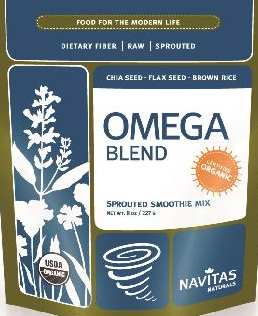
RECALLED – Sprouted Chia Seed Powder Products

June 6, 2014 – Product Recall – Navitas Naturals Expands Voluntary Recall for Organic Sprouted Chia Powder Products.